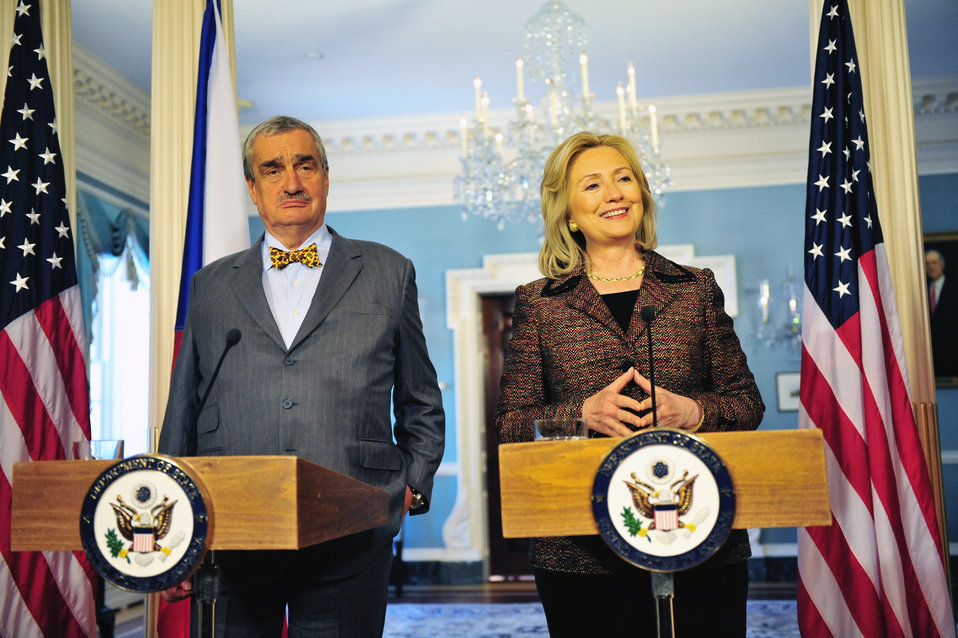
Secretary Clinton and Czech Foreign Minister Karel Schwarzberg Hold a Joint Press Conference

U.S. Secretary of State Hillary Rodham Clinton holds a joint press conference with Czech Foreign Minister Karel Schwarzberg after their bilateral meeting at the U.S. Department of State in Washington, D.C., on June 2, 2011.